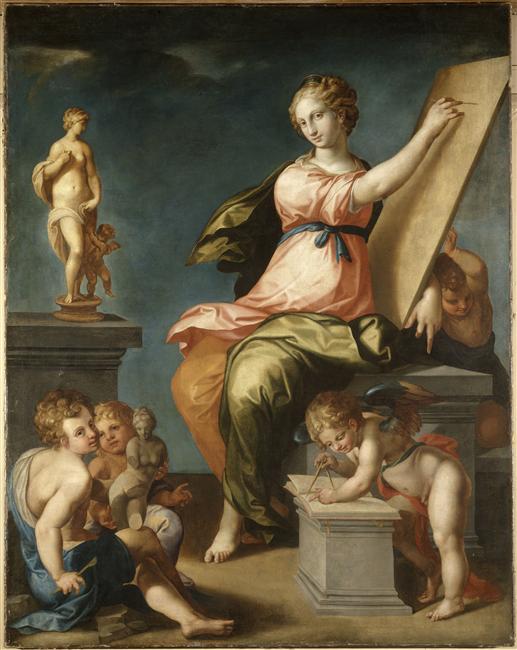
Ambroise Dubois 1543-1614 Allegorie de la Peinture et de la Sculpture.